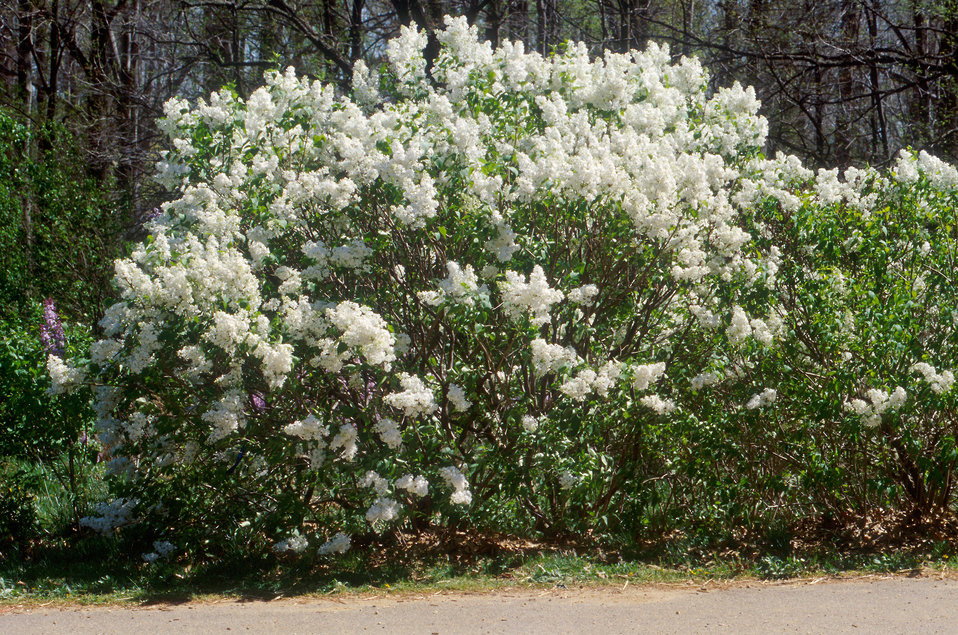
The new lilac cultivar named Betsy Ross has fragrant white flowers and tolerates powdery mildew.